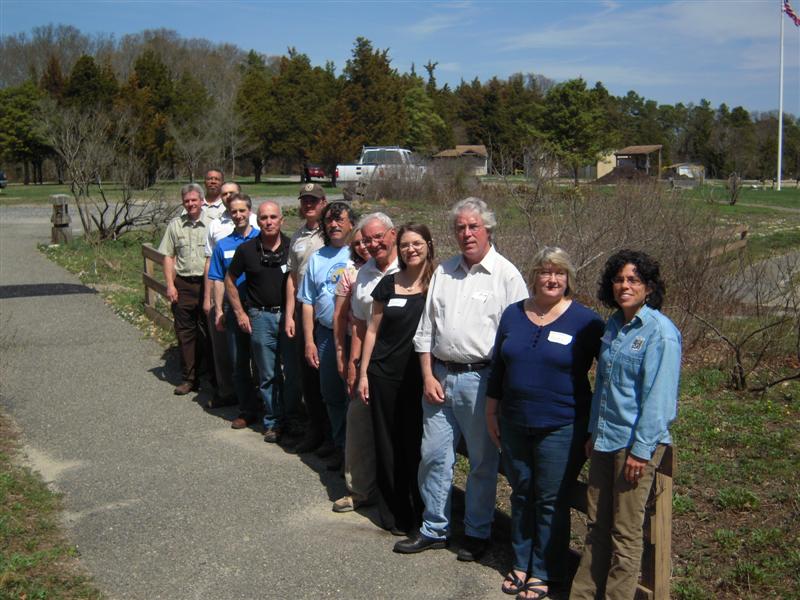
Vulnerability Assessment participants

Representatives of federal, state and local conservation agencies joined the Service and Refuge Friends groups at E.B. Forsythe NWR.